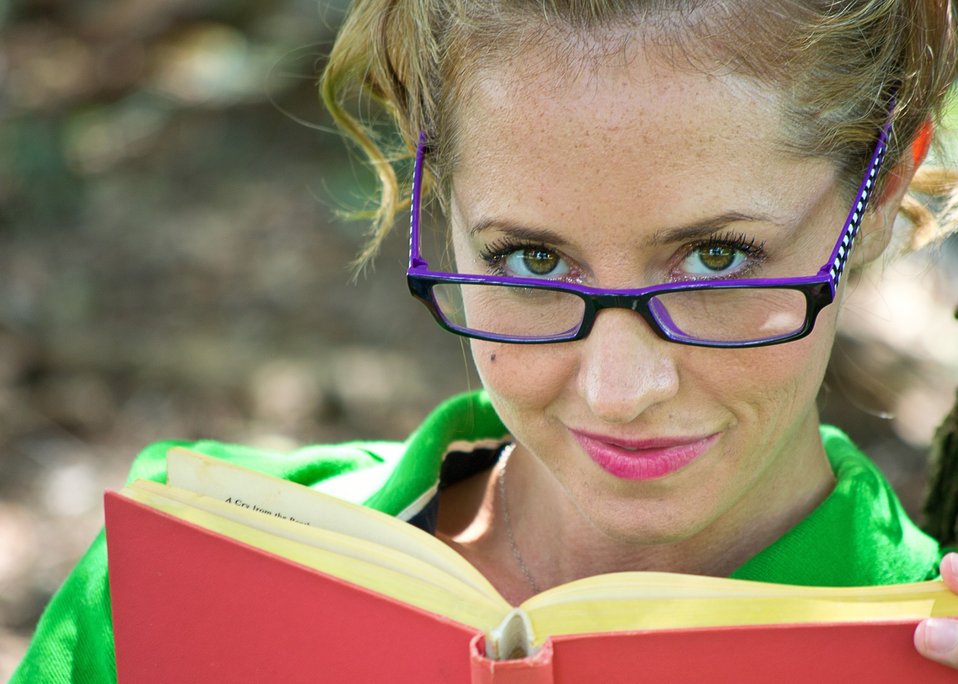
Reading girl

A woman with trendy glasses and a book..